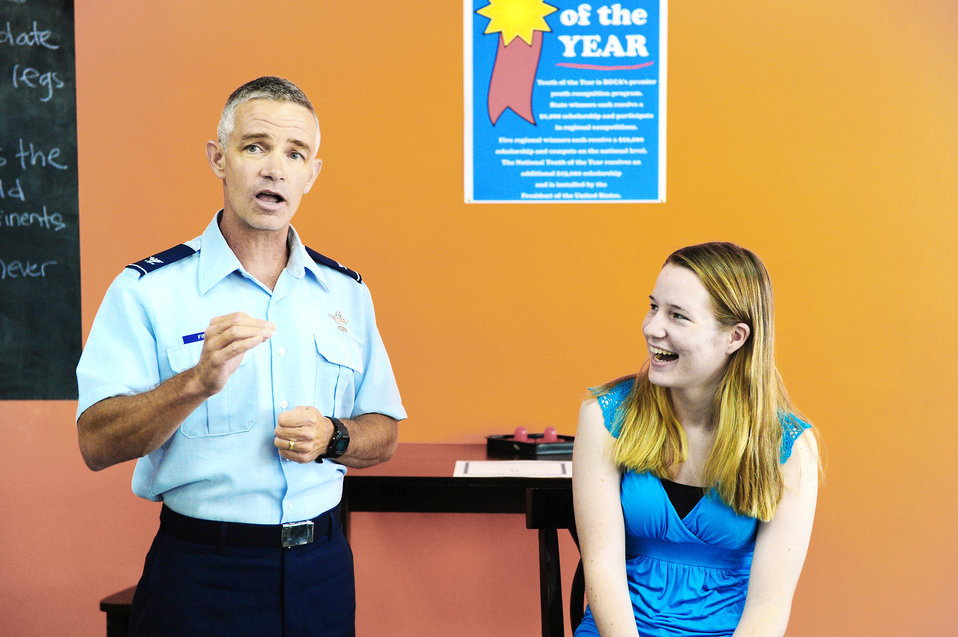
Dependent wins Air Force writing contest

Ashley Nelson, daughter of Master Sgt. Dennis Nelson of the 36th Civil Engineer Squadron, reacts with surprise when Col. Tod Fingal tells her she has won an Air Force writing contest Feb. 22, 2010, at Andersen Air Force Base, Guam. The contest was sponsored by MyAirForceLife.com and the $2,000 prize package included a new computer and $500 gift card. Colonel Fingal is the 36th Wing vice commander.